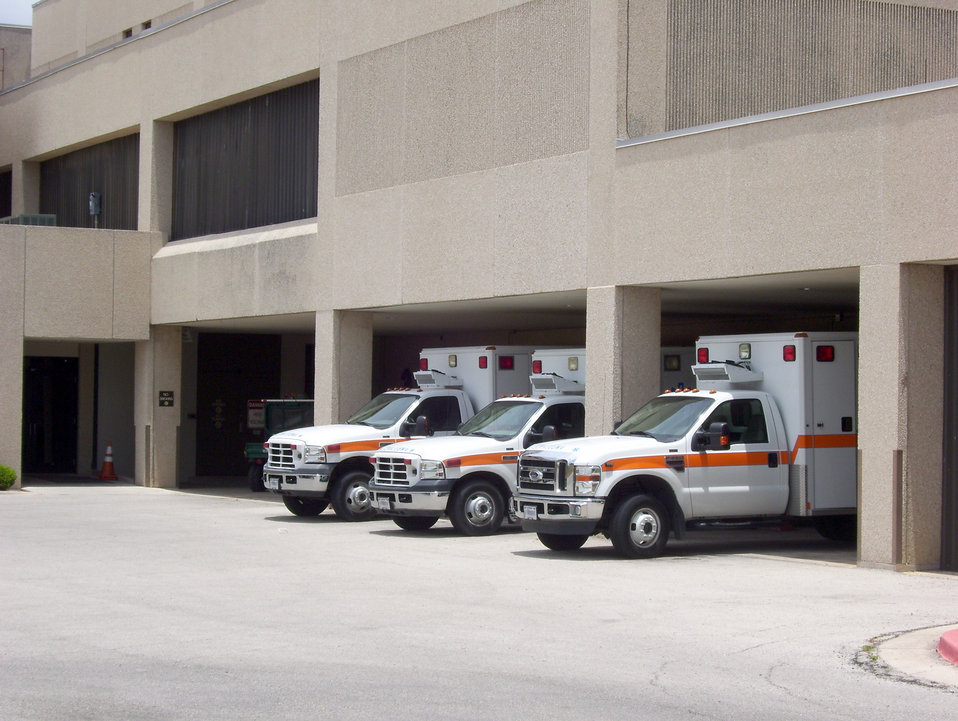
Air Force trauma center

Ambulances are parked outside the emergency room at Wilford Hall Medical Center, San Antonio. Beginning July 1, 2010, Wilford Hall Medical Center will discontinue trauma services. All severely injured trauma patients from San Antonio, Bexar County and surrounding counties, and South Texas, will go to nearby Brooke Army Medical Center or University Hospital in San Antonio, the other two leading trauma centers serving the region.